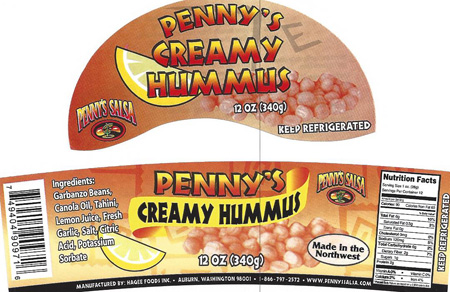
RECALLED – Hummus

July 16, 2013 – Product Recall – Hagee Foods Inc. dba Penny's Salsa Inc. Recalls Hummus Products Because of Possible Health Risk.